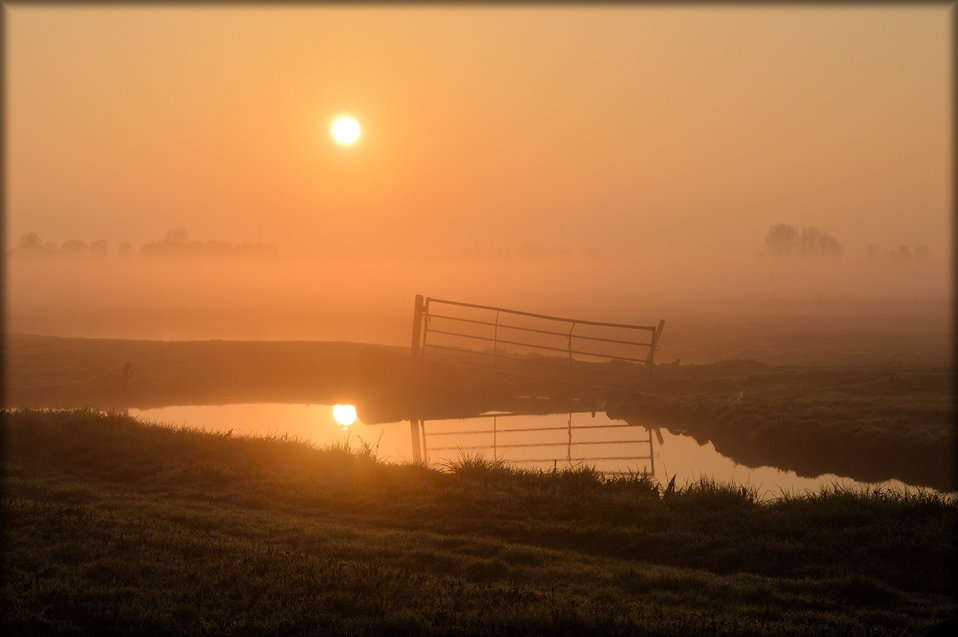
Sunrise

Rising sun with reflection in the water.